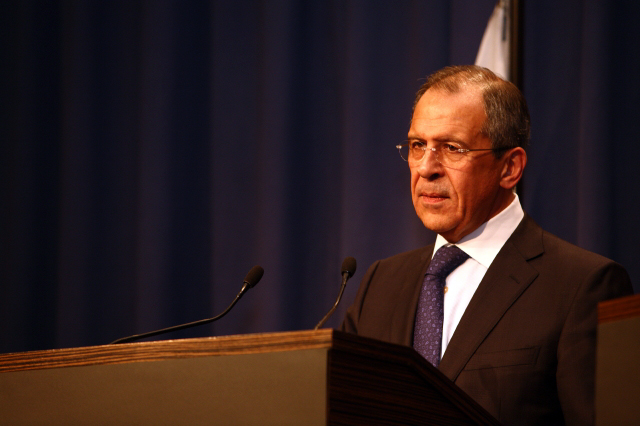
Press Conference With Russian Foreign Minister

Press conference after dinner meeting between U.S. Secretary of State Hillary Rodham Clinton and Russian Foreign Minister Sergey Lavrov in Geneva, Switzerland March 6, 2009.